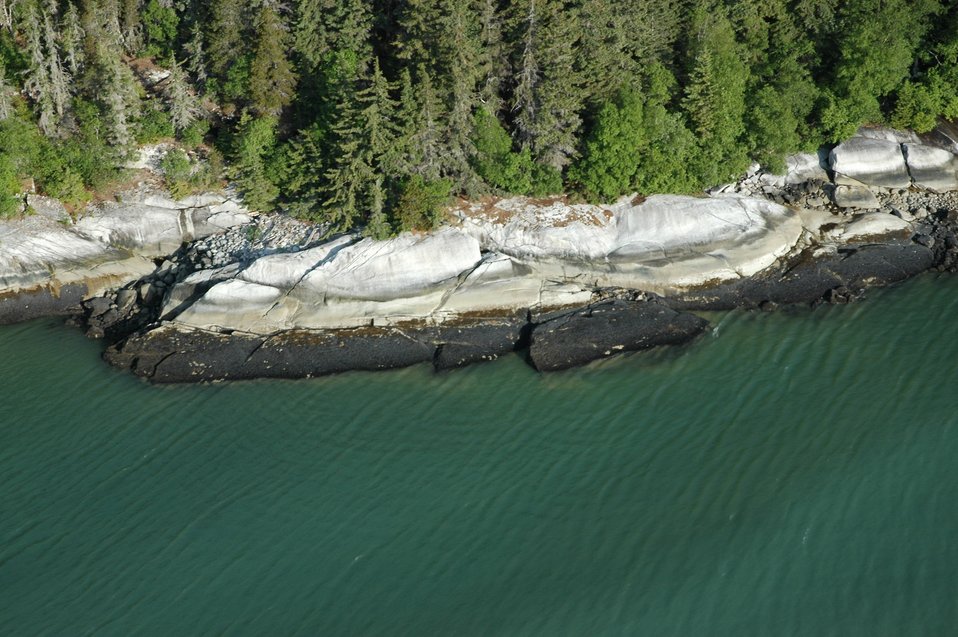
Aerial photograph. Tidal banding on a smooth rock shoreline.